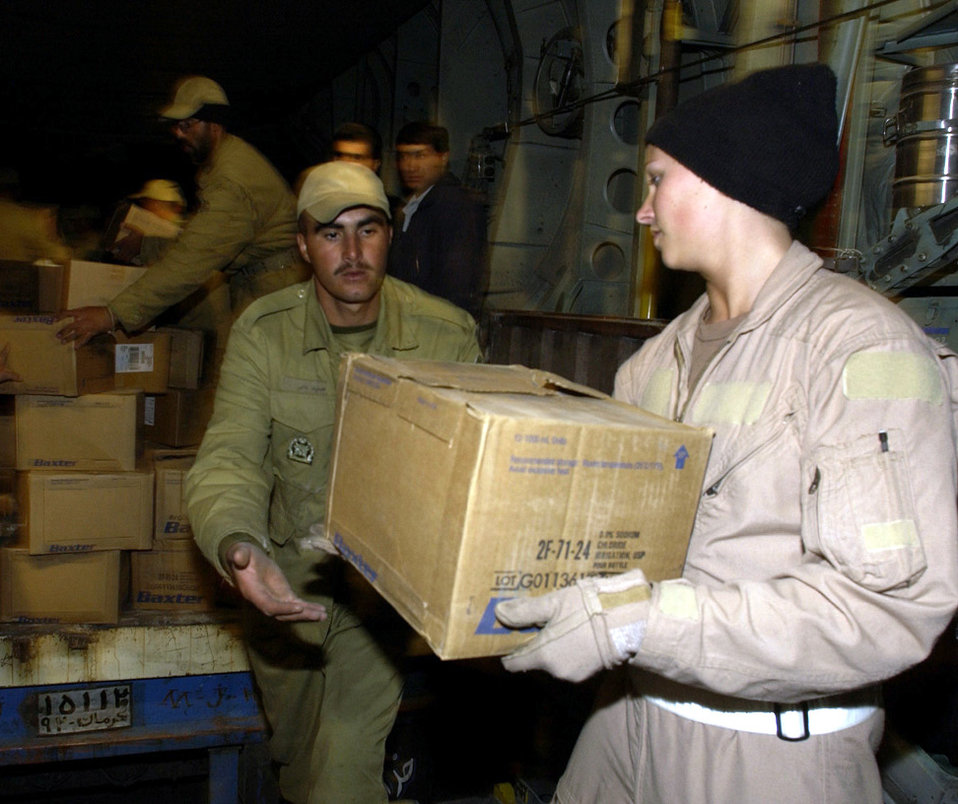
Providing humanitarian aid

KERMAN, Iran -- Senior Airman Lindsey Whicker hands a box of water to an Iranian soldier here Dec. 28 as part of humanitarian relief efforts. Whicker is assigned to the 746th Expeditionary Airlift Squadron and was part of a C-130 Hercules crew which airlifted 20 pallets of humanitarian supplies to Iran after an earthquake destroyed the city of Bam.